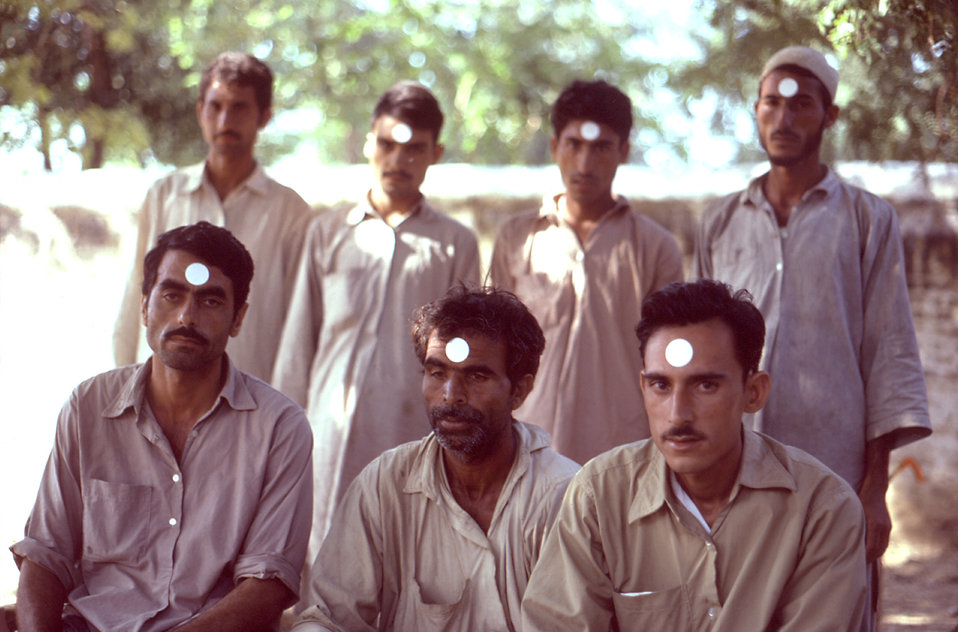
This photo depicts Pakistani malaria control workers undergoing skin patch testing during a 1976 malathion poison study.